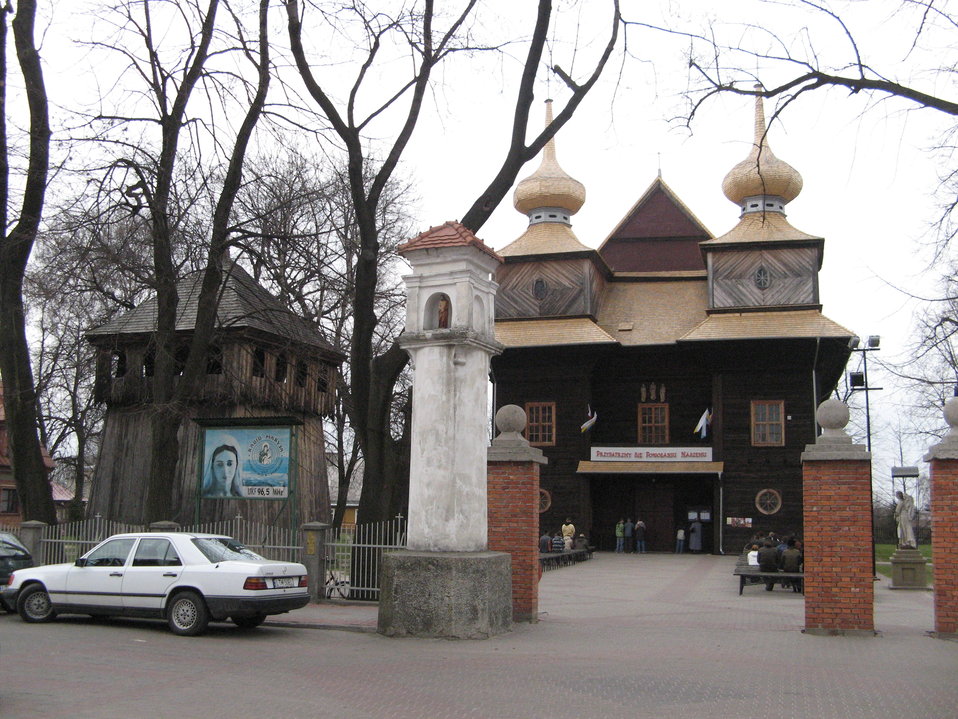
It is entirely my own work